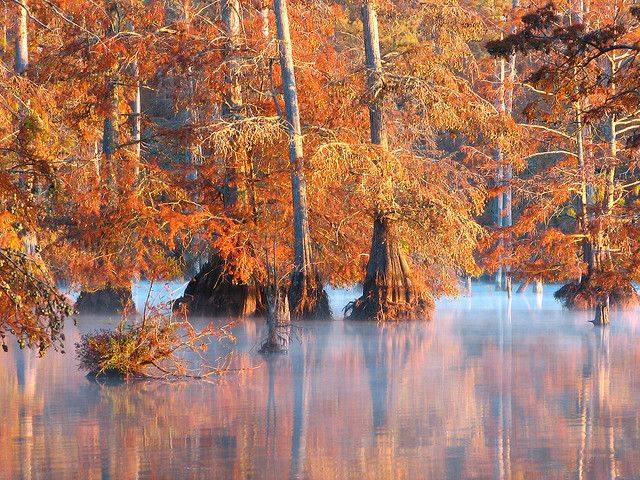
Sam D. Hamilton Noxubee National Wildlife Refuge